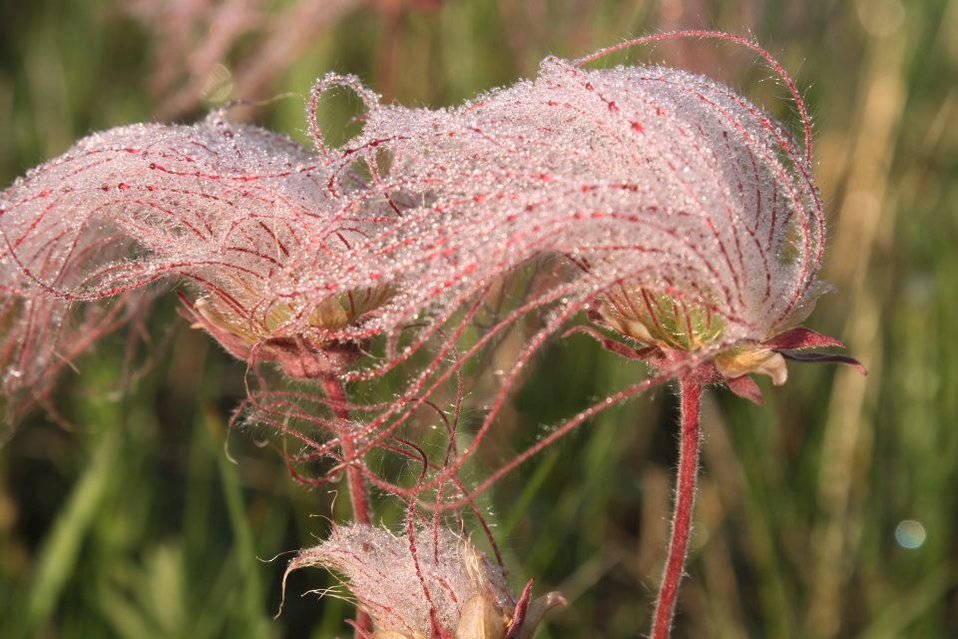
Prairie Smoke

This beautiful native prairie flower is called Prairie Smoke (Geum triflorum). As you can see, it was named for its feathery flowers which resemble a puff of pink smoke.